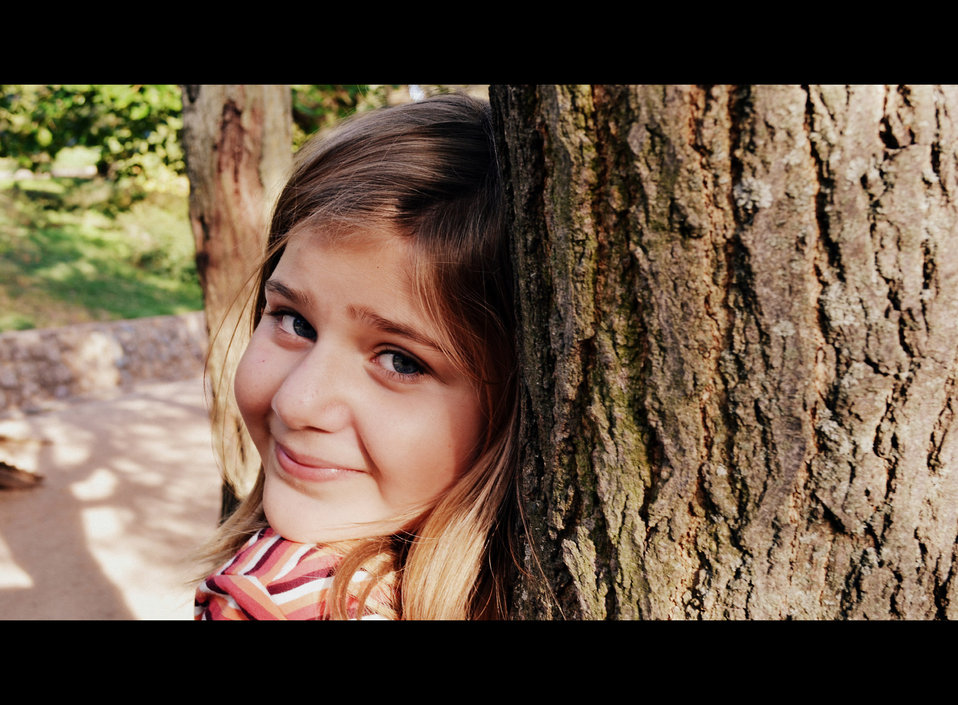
Portrait

Young model.